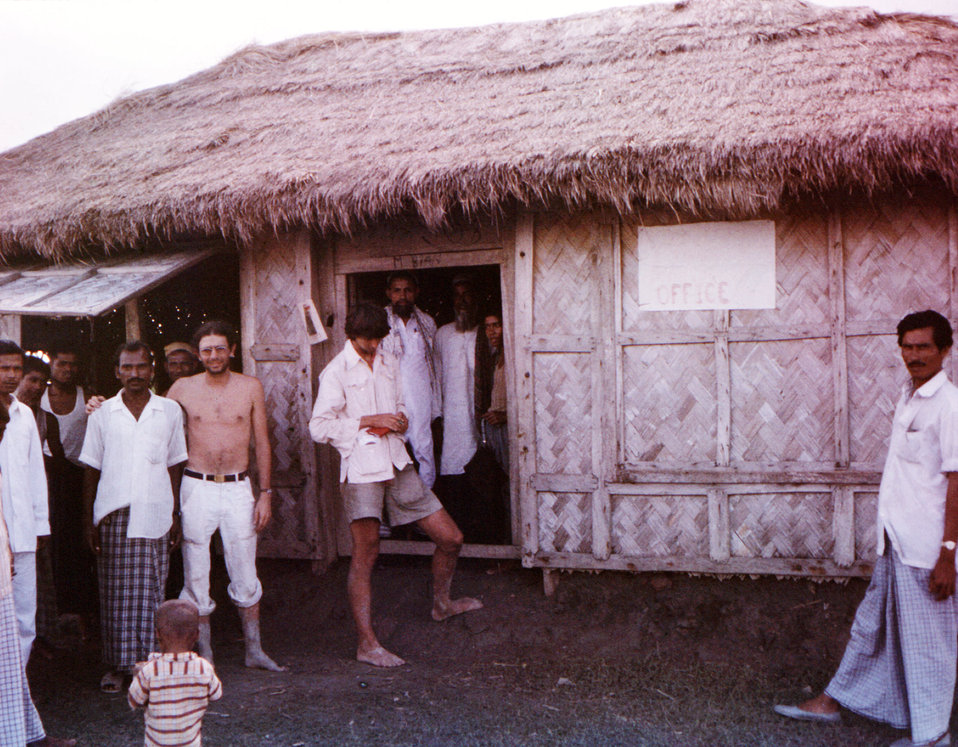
This image, captured September, 1975, depicted the shirtless Dr. Michael Schwartz, and wearing shorts, was Swedish-based Dr. Harald Heijbel standing in front of the Smallpox Office and residence at the Lord Hardinge Bazaar, located on Bhola Island, which at the time was open for business.